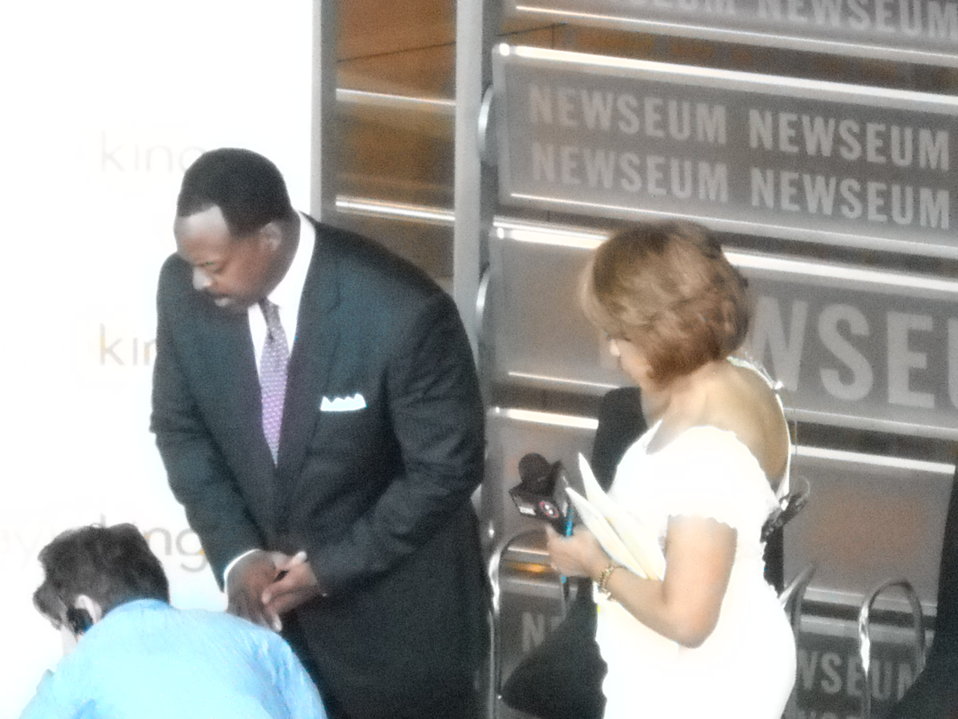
National No Phone Zone Day Newsum Washington, DC April 30, 2010 038